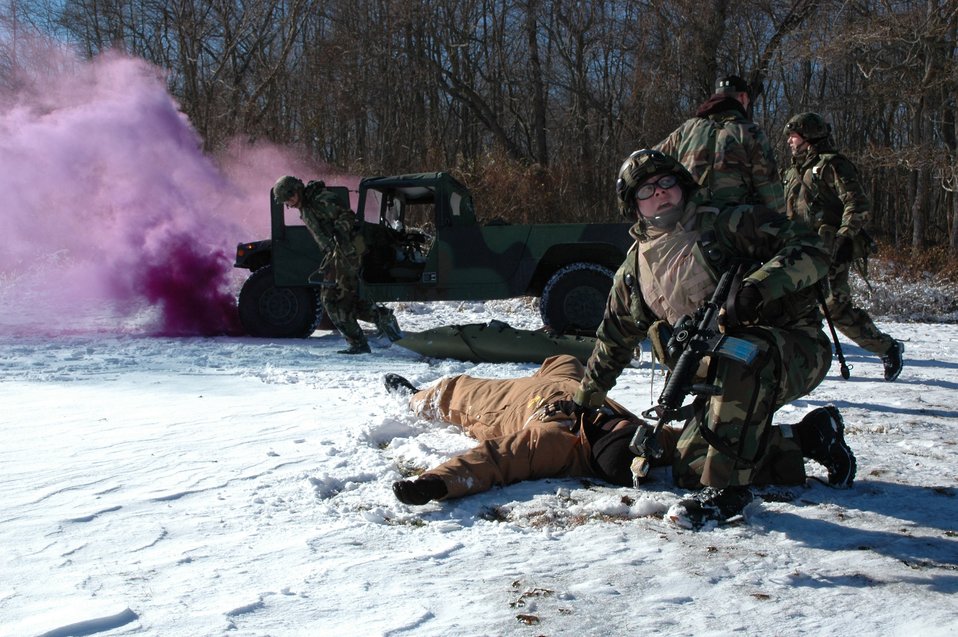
Winter training

FORT DIX, N.J. -- First Lt. Brooks Roland calls to fellow Airmen for support as he tends to a sucking chest wound during a combat first aid obstacle course here Jan. 15. Lieutenant Roland is a security forces officer with the 621st Contingency Response Wing at McGuire Air Force Base, N.J.